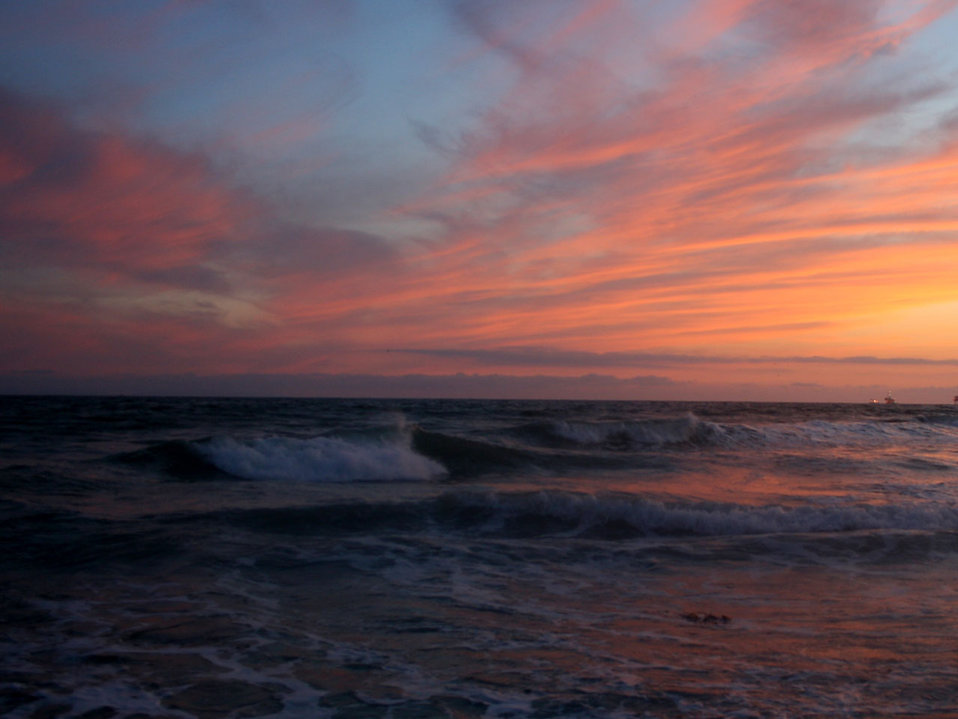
Surfside sunset

Shot on huntington beach, california, 7 june 2009.